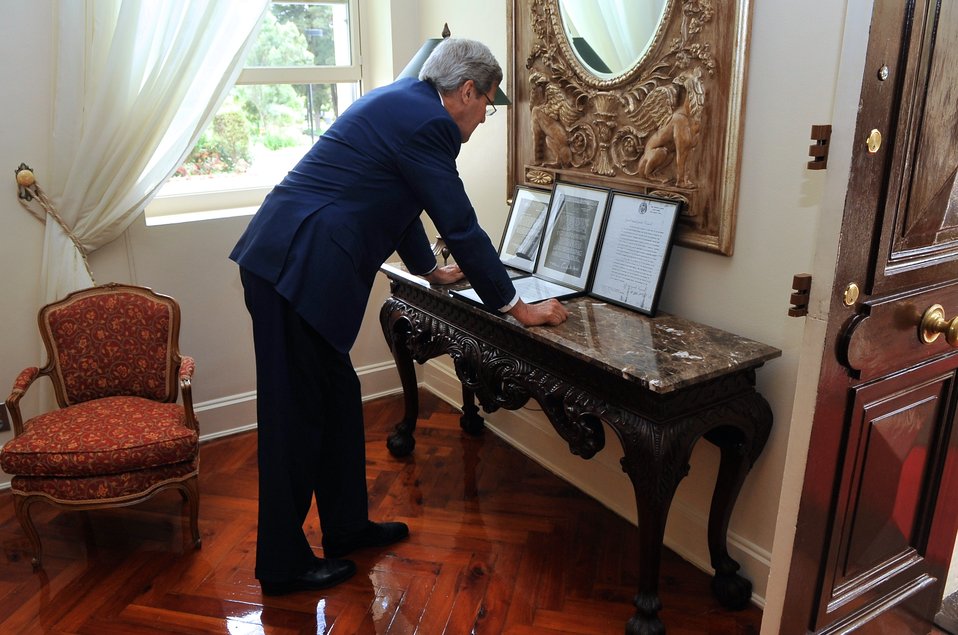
Secretary Kerry Reviews Documents Outlining History of Ambassador's Residence in Addis Ababa

U.S. Secretary of State John Kerry reviews historical documents outlining the history of the U.S. Ambassador's Residence on the grounds of Embassy Addis Ababa, Ethiopia on May 1, 2014.